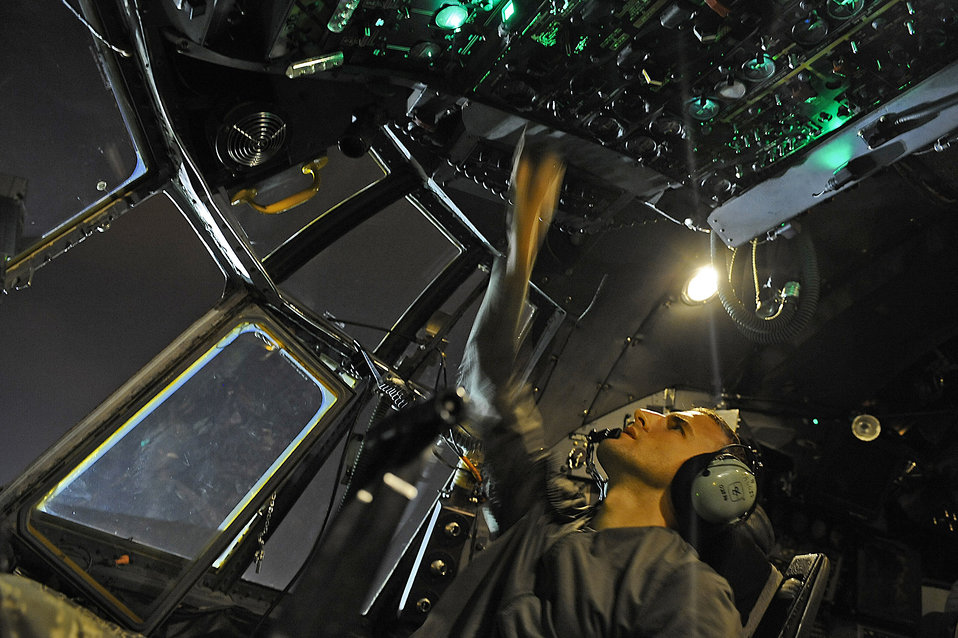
Checking it twice

From the cockpit, Senior Airman Marc Dannemiller checks the voltage on a newly installed engine for an AC-130H Spectre May 13 at Hurlburt Field, Fla. Airman Dannemiller is an aerospace propulsion specialist with the 1st Special Operations Aircraft Maintenance Squadron.